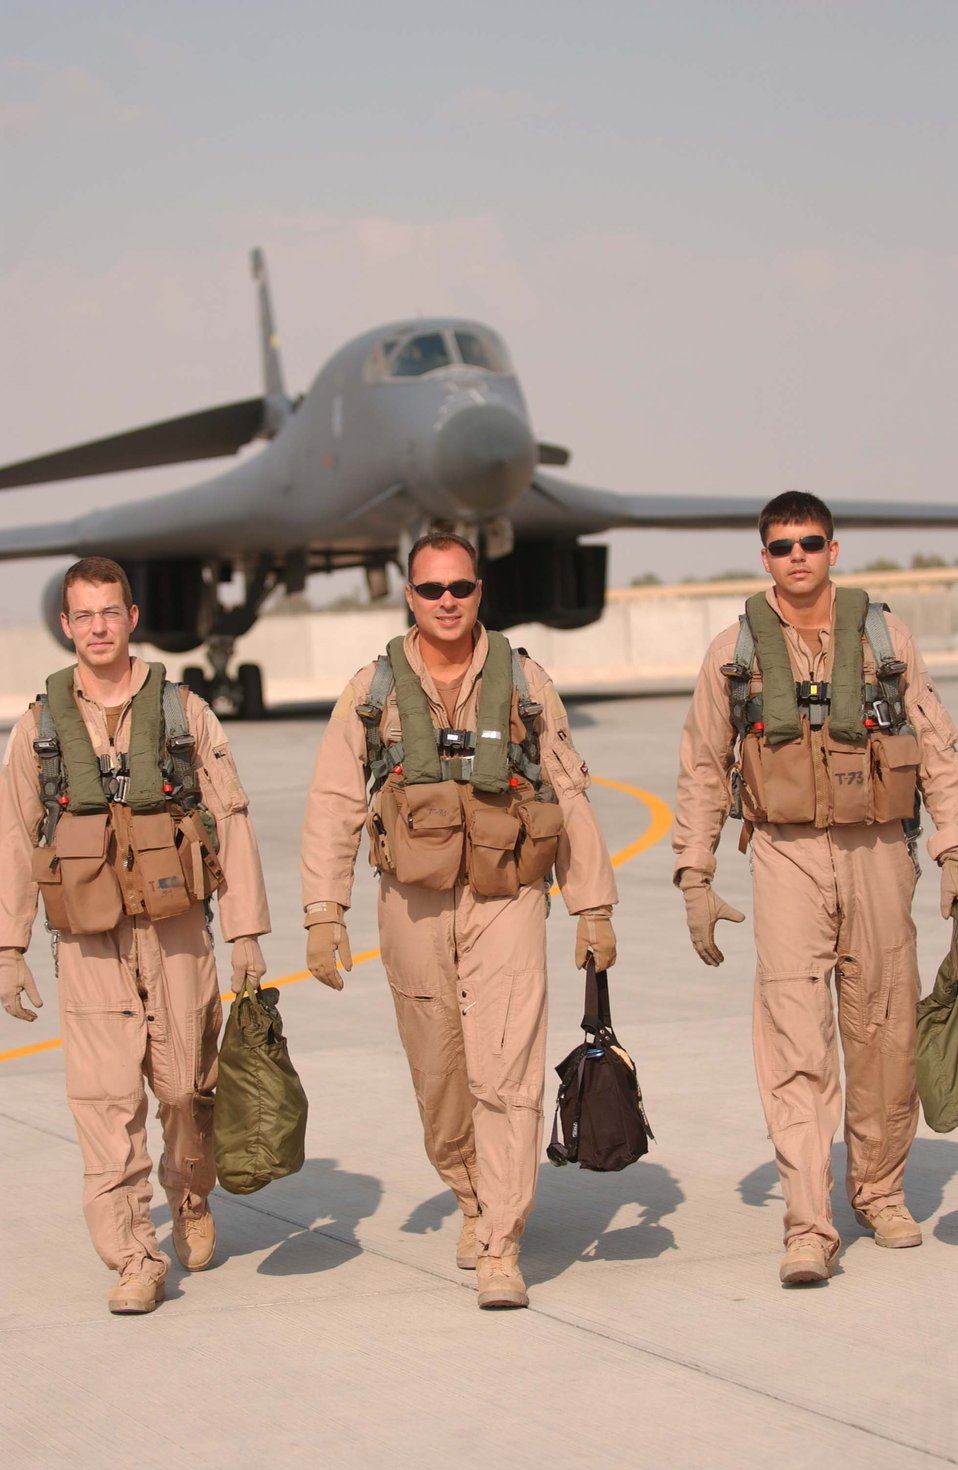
B-1B Lancer crew

After a 12-hour nighttime close-air support mission over Afghanistan recently, Capt. Craig Morrison, Maj. Mike Jason and Capt. David Grasso walk from a B-1B Lancer. The weapon systems officer, aircraft commander and co-pilot are assigned to the 37th Expeditionary Bomb Squadron, part of the 379th Air Expeditionary Wing in Southwest Asia.